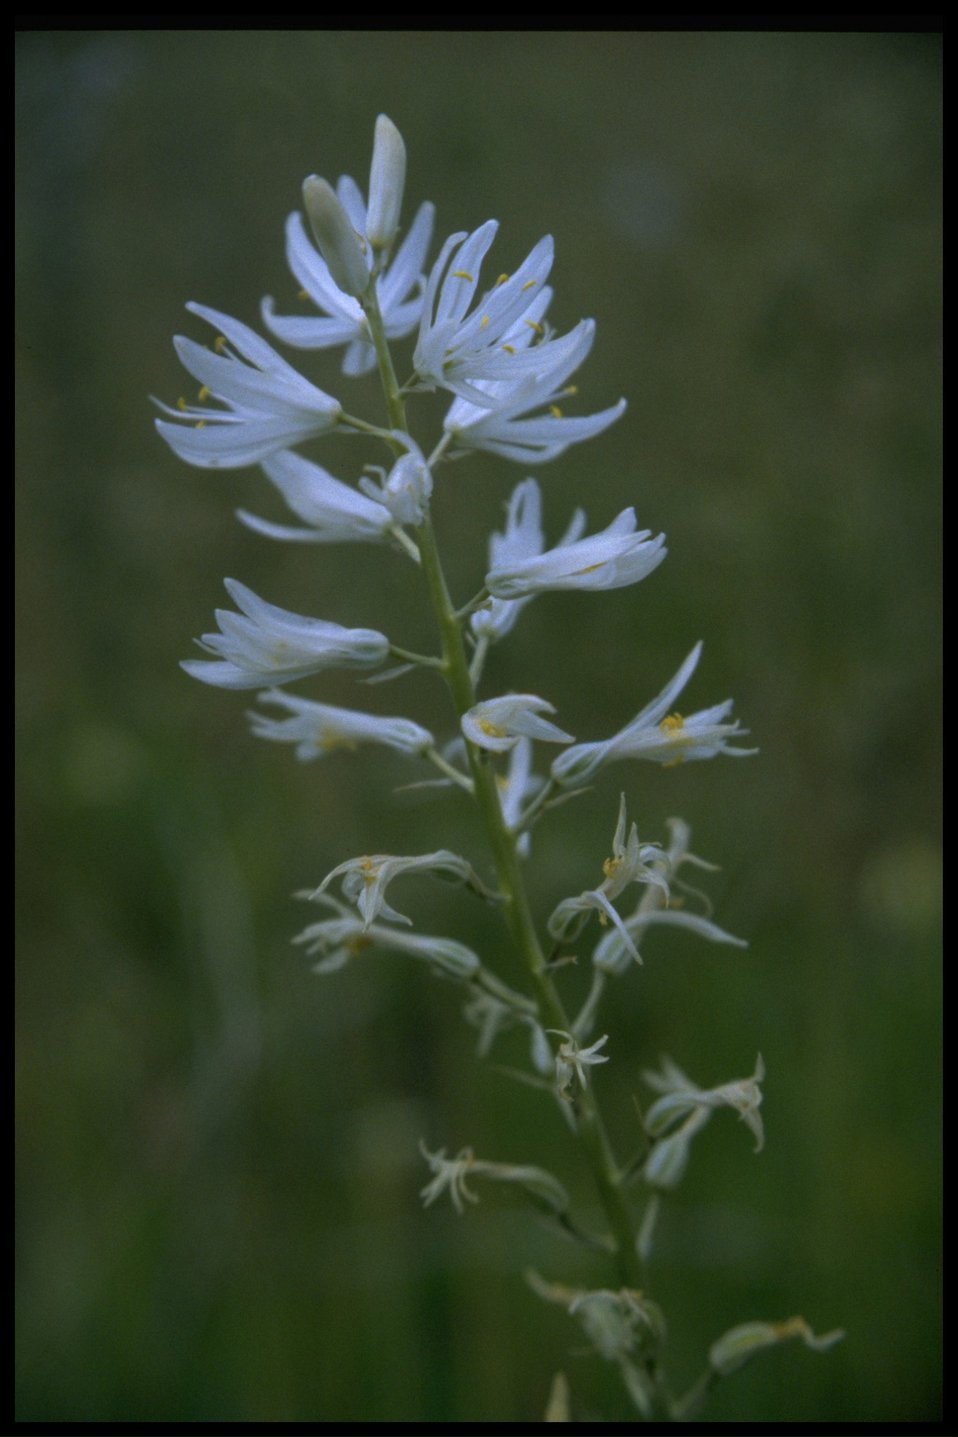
Closeup shot of Cusick's Camas wildflower - albino variant.